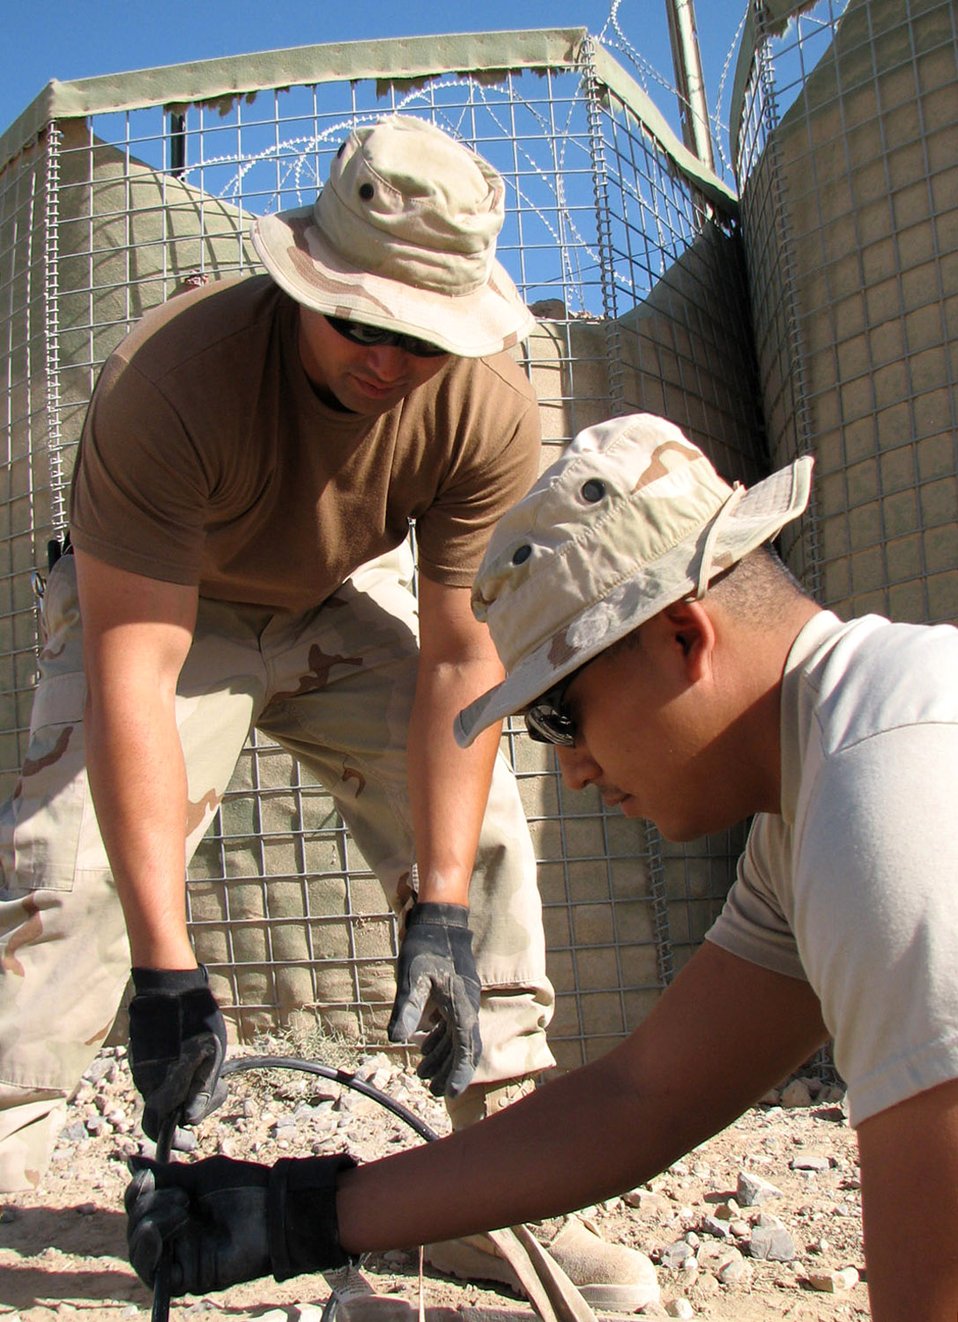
Keeping it moving in Kandahar

Staff Sgt. Gega Nicholas (left) and Senior Airman Ryan DelaPena inspect communications cabling Oct. 12 at Kandahar, Afghanistan. Sergeant Nicholas and Airman DelaPena are members of the 455th Air Expeditionary Wing, whose mission is to provide close-air support, mobility, intelligence, surveillance and reconnaissance in support of the war on terrorism.